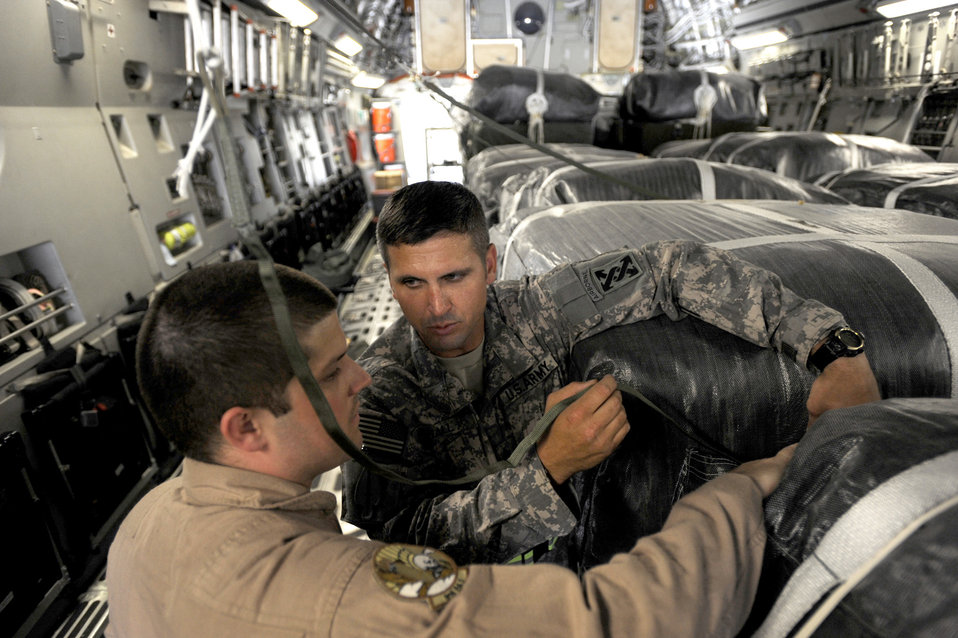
Operation Enduring Freedom

Army Sergeant 1st Class Jonathan Hall (right) speaks with Staff Sgt. Bryan Carey regarding his findings during a joint inspection of container-delivery-system bundles May 9, 2010, at an undisclosed air base in Southwest Asia. Sergeant Hall is an airdrop inspector assigned to the 824th Quartermaster Company, Det. 8. Sergeant Carey is a C-17 Globemaster III loadmaster assigned to the 816th Expeditionary Airlift Squadron.